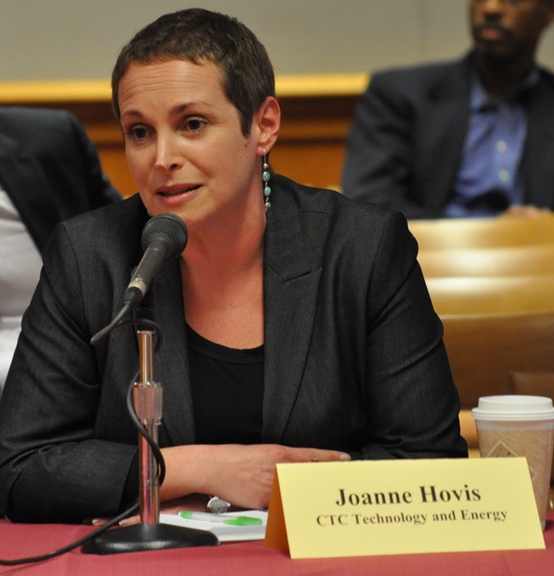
Rural Broadband Workshop: March 19, 2014

Moderator for Panel 3: State Strategies to Meet the Rural Broadband Challenge